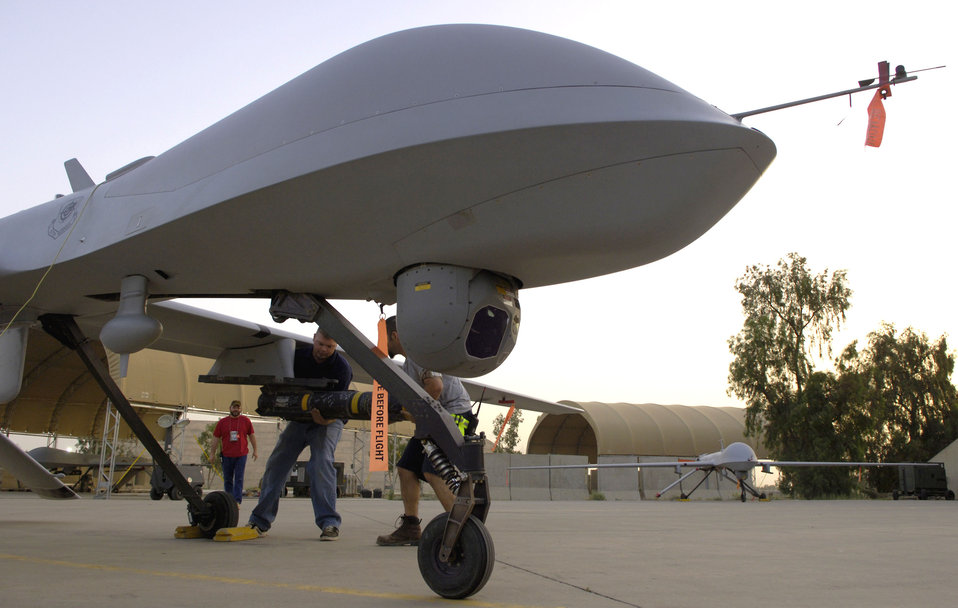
Arming an MQ-1 Predator

Joseph Stutzman and Robert Attard, contractors from General Atomics Aeronautical Systems, Inc., switch an AGM-114 Hellfire missile from one MQ-1 Predator to another on May 16, 2006, at Balad Air Base, Iraq. Mr. Stutzman and Mr. Attard are aircraft mechanics assigned to the 46th Expeditionary Aircraft Maintenance Unit. Contractors began replacing some military maintainers in February 2006, and recently took over as the primary mechanics for the Predator.